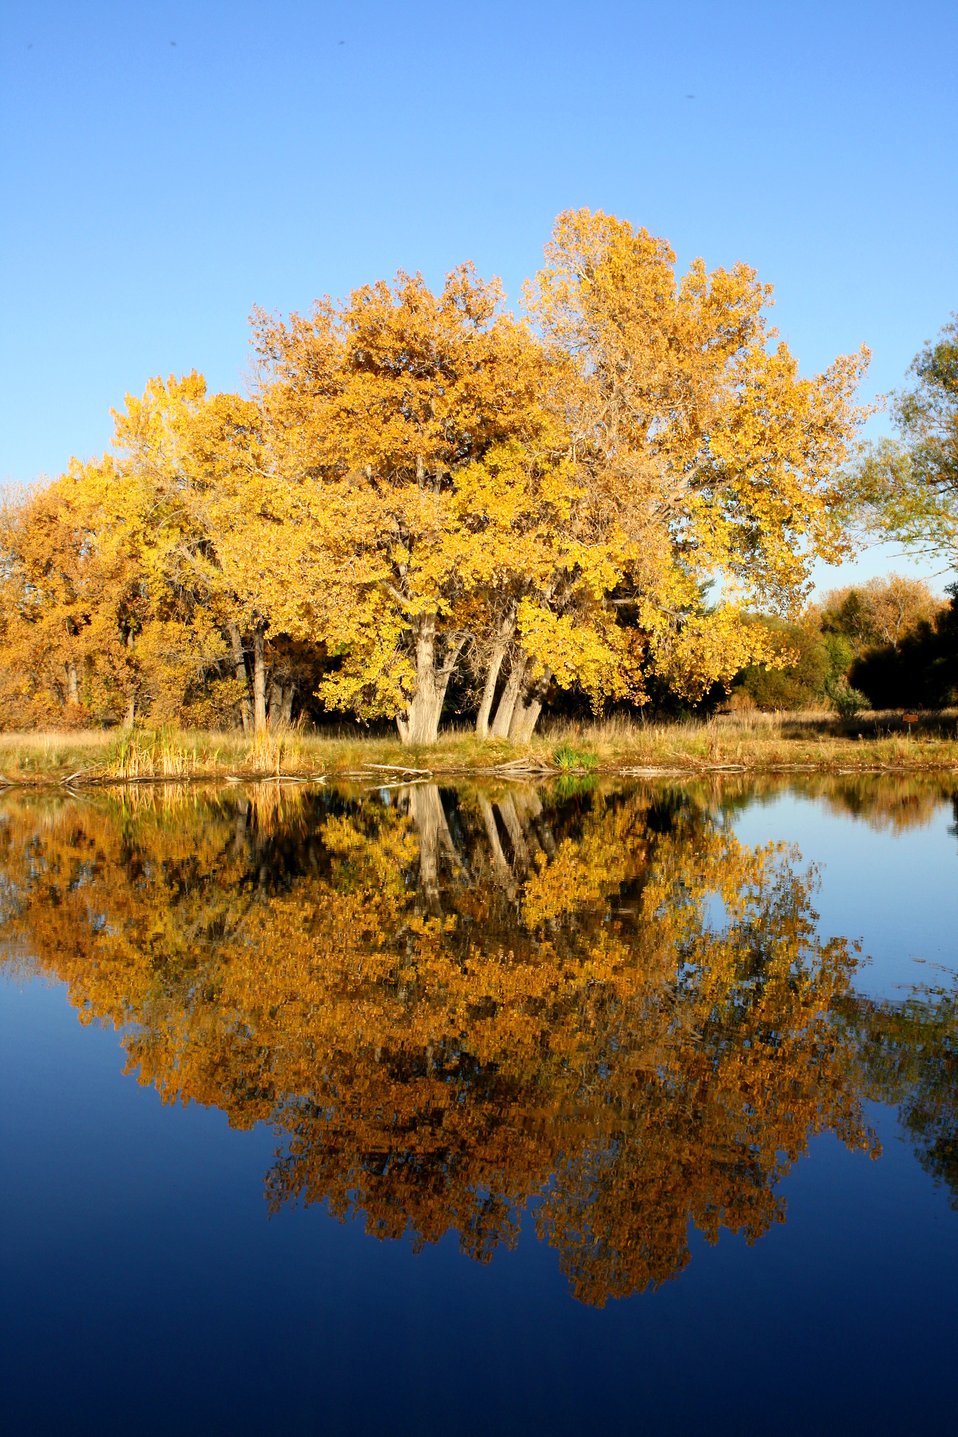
Free high resolution photo of fall trees by a lake. The tree leaves are turning a beautiful gold or auburn color and there is cloudless blue sky above. The trees and sky are reflected in the water of the lake.